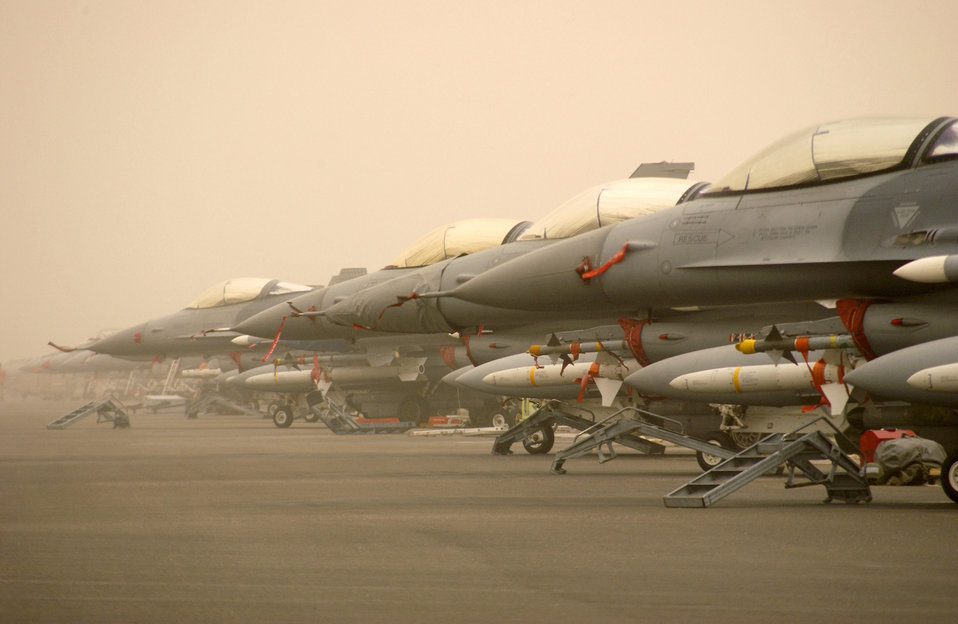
Sand, sand, and more sand

OPERATION IRAQI FREEDOM -- F-16CJs assigned to the 379th Air Expeditionary Wing weather a sandstorm at a forward-deployed location. Sandstorms often make work difficult for airmen in the region. Despite the challenge, aircraft from the base flew combat sorties in support of Operation Iraqi Freedom that day.